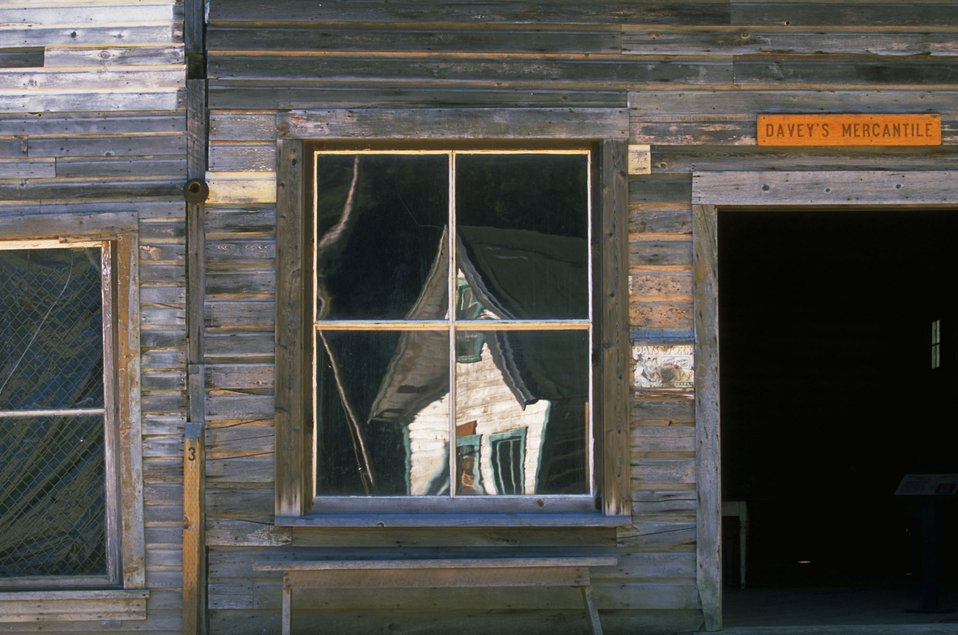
Davey's Mercantile in Garnet Ghost Town